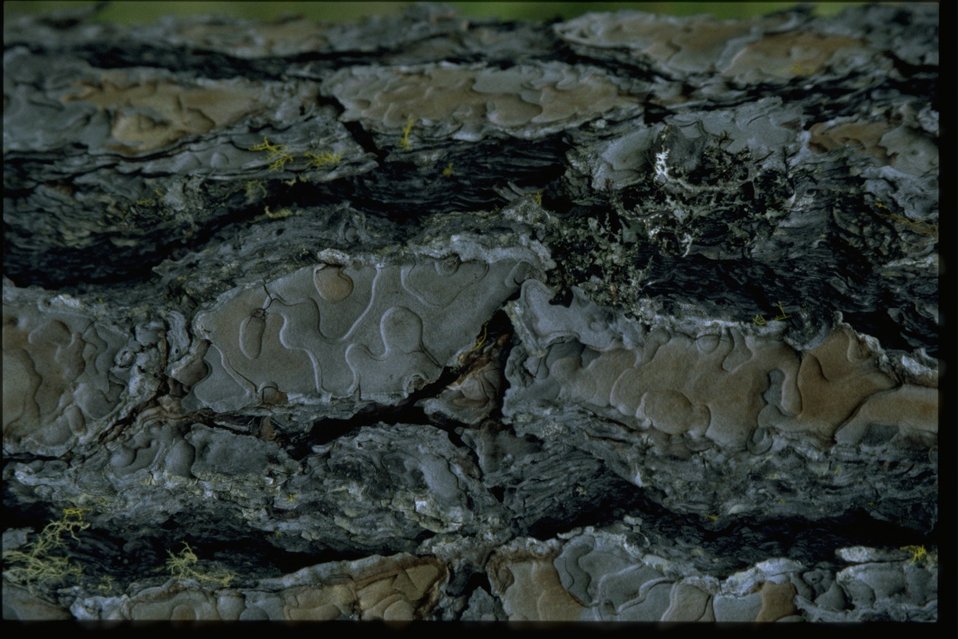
Closeup shot of Yellow Pine (Pinus jeffreyi) bark.